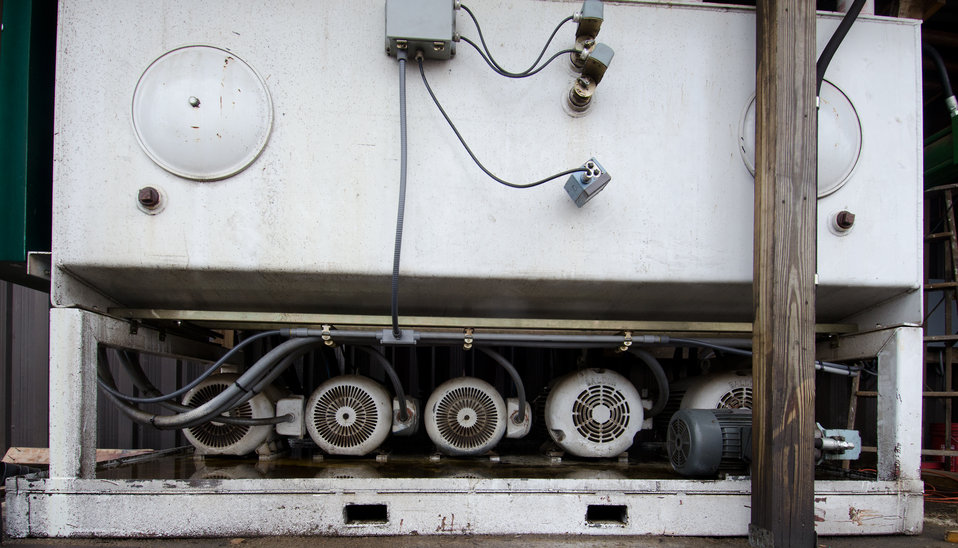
Electric motors replaced diesel engines at Heidel Hollow Farms a family owned farm since 1852 and is currently an 1,800 acre operation in Germansville, PA on April 20, 2011. Led by President David Fink they mainly produce and compact hay for export; additionally they grow produce on 300 acres for local sale within a 40-mile radius. With the financial help of the U.S. Department of Agriculture (USDA) the hay compactor’s diesel engines were replaced with clean low-maintenance, low operating cost electric motors (seen under the hydraulic fluid sump tank), drive the pumps for the compactor's hydraulic system. The compactor increases the density of baled hay by two and half times for more efficient shipping to overseas customers.